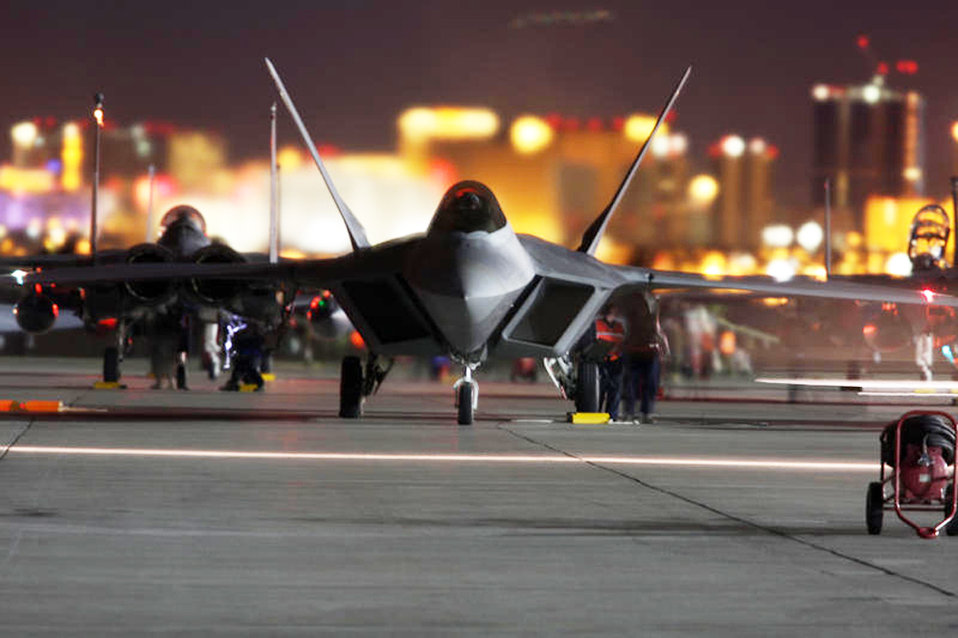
Raptors reign at Red Flag

The lights of the Las Vegas Strip shine in the background as an F-22 Raptor taxies on the flightline at Nellis Air Force Base, Nev., Feb. 1, 2010, during Red Flag. Red Flag is a realistic combat training exercise involving the air forces of the United States and its allies. The exercise is conducted on the 15,000-square-mile Nevada Test and Training Range north of Las Vegas.